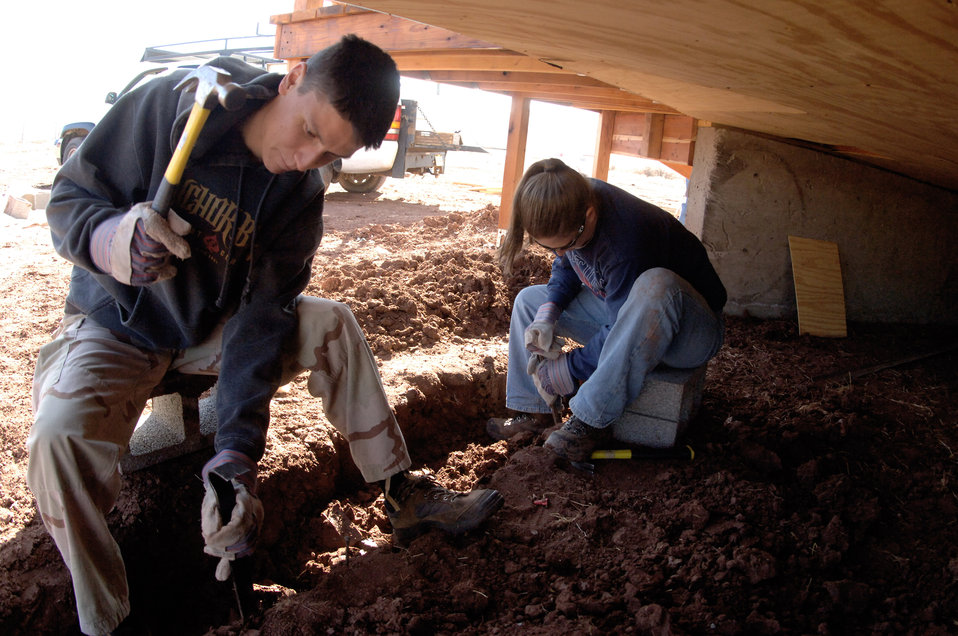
AF Academy volunteers renovate Navajo home

Air Force Academy Cadet 3rd Class Ted Ornelas and Cadet 2nd Class Holly Bigelow excavate frozen soil from underneath an Academy-built Navajo Hogan March 26 in Navajo, N.M. The soil must be excavated before concrete and block can be set to finish the traditional eight-sided Navajo home's foundation. The hogan will provide a home for a family on the Navajo reservation in northwest New Mexico. Cadets Bigelow and Ornelas are part of a group of 20 cadets, civil engineering faculty and family members who volunteered during the Academy's spring break to work on the Navajo reservation.